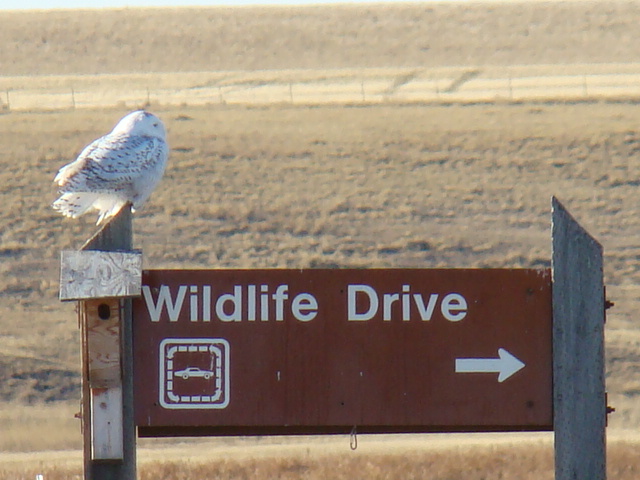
Snowy Owl

Every winter we get at least one really great Snowy Owl sighting on the Refuge!